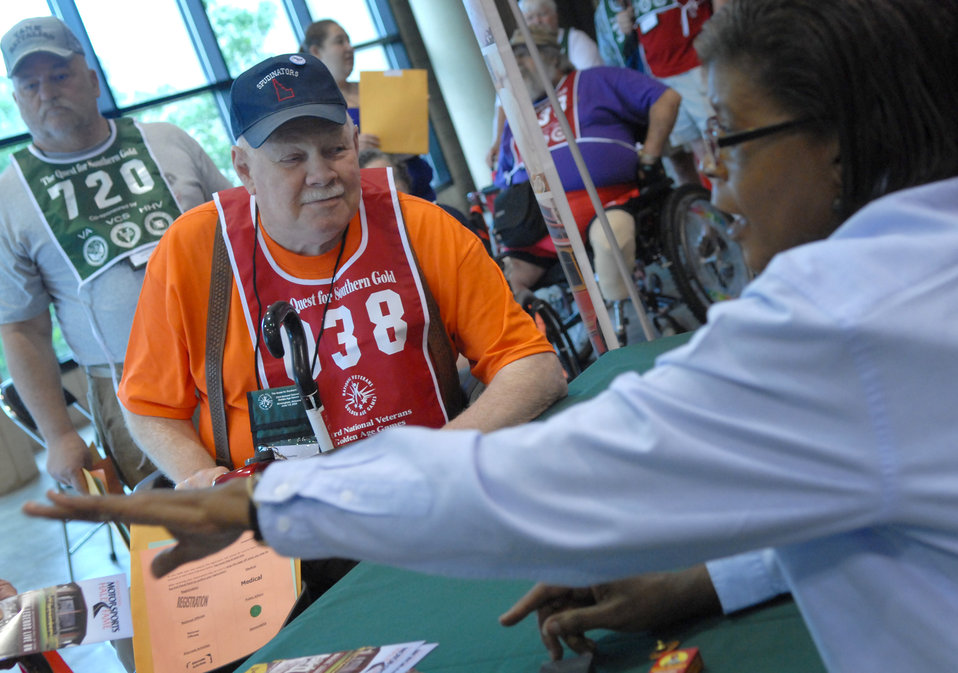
VA National Golden Age Games

Jack Kesgard (center), a 72-year-old Air Force veteran, registers for the 23rd Annual National Veterans Golden Age Games June 1 in Birmingham, Ala. Nearly 700 senior veterans, ages 55 and older, registered to participate in the athletic competitions here.